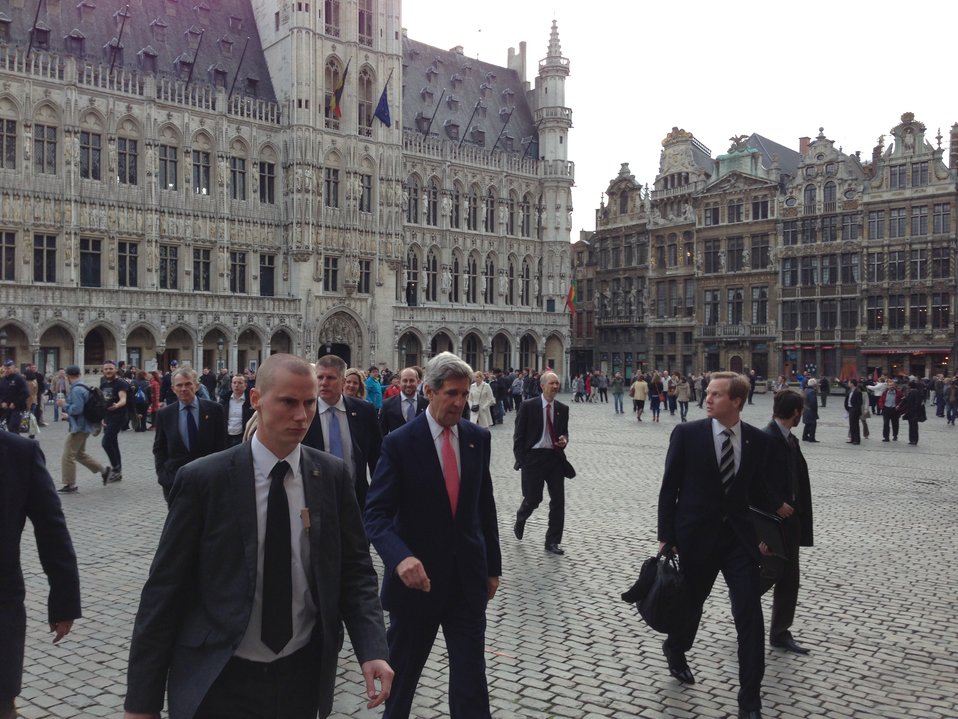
Secretary Kerry Walks Through the Grand Place in Brussels

U.S. Secretary of State John Kerry and senior staff walk through the Grand Place in Brussels, on Belgium, April 22, 2013.